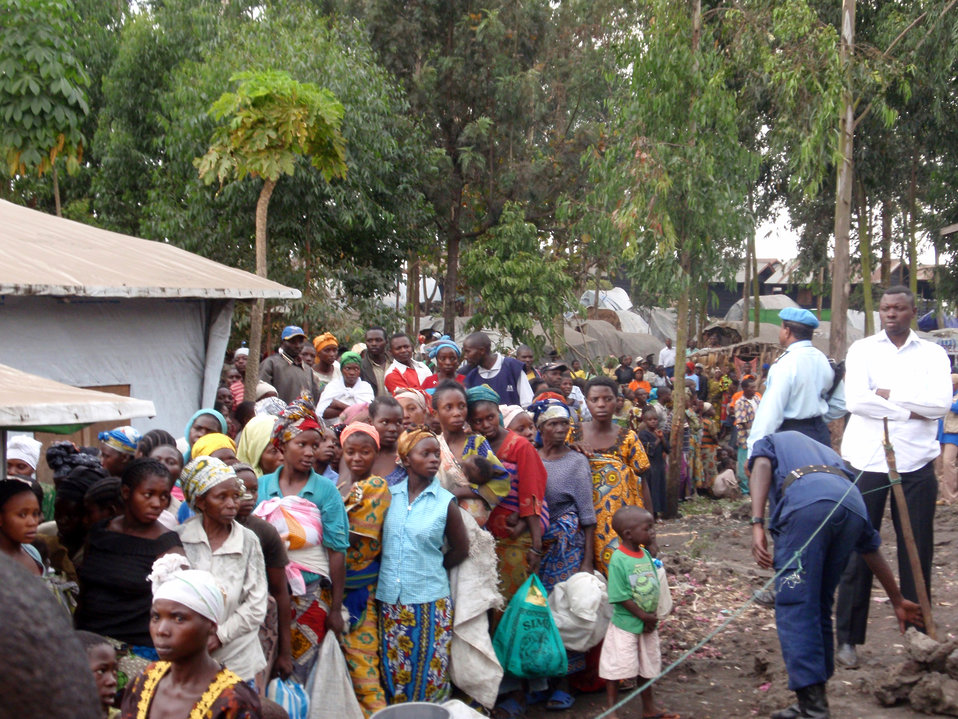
Behind the Scenes: Mugunga IDP Camp

The scene during the arrival of U.S. Secretary of State Hillary Rodham Clinton at the Mugunga Internally Displaced Person (IDP) Camp in Goma, Democratic Republic of Congo August 11, 2009.